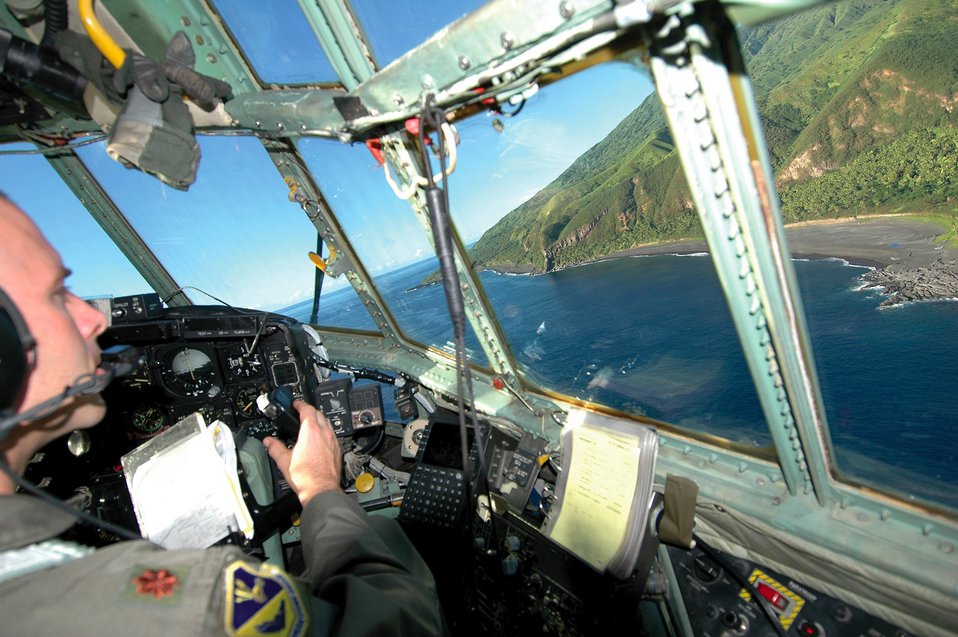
Airmen 'drop' in to help islanders

ANDERSEN AIR FORCE BASE, Guam (AFPN) -- Maj. Matt Wehner looks out over the northern Micronesian Island of Agrihan after dropping a pallet of supplies. Airmen from Yokota Air Base, Japan, travel to Andersen each year to airdrop the donated supplies. Major Wehner is a pilot with the 36th Airlift Squadron from Yokota AB.